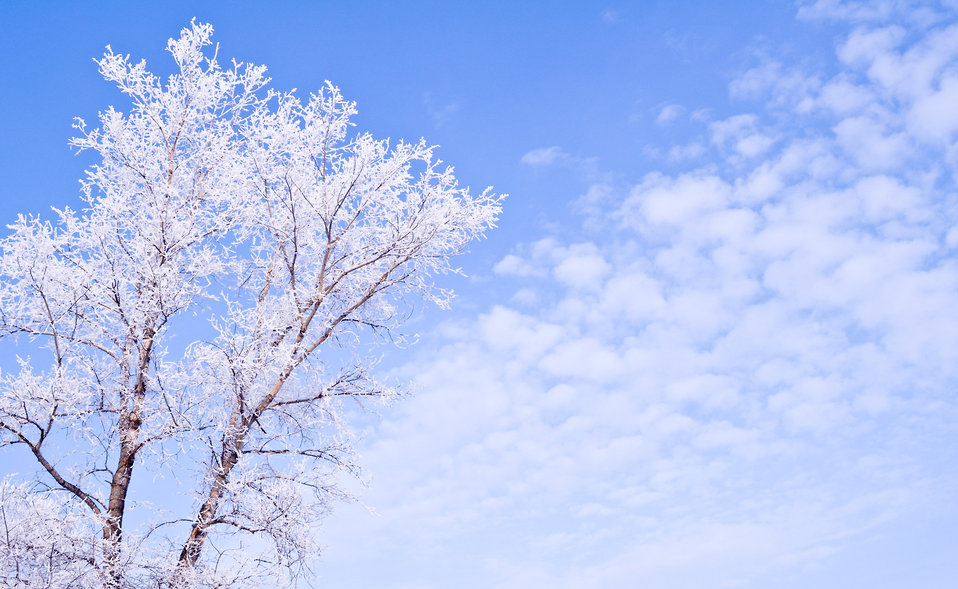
Winter and forest

Winter landscape in the forest.